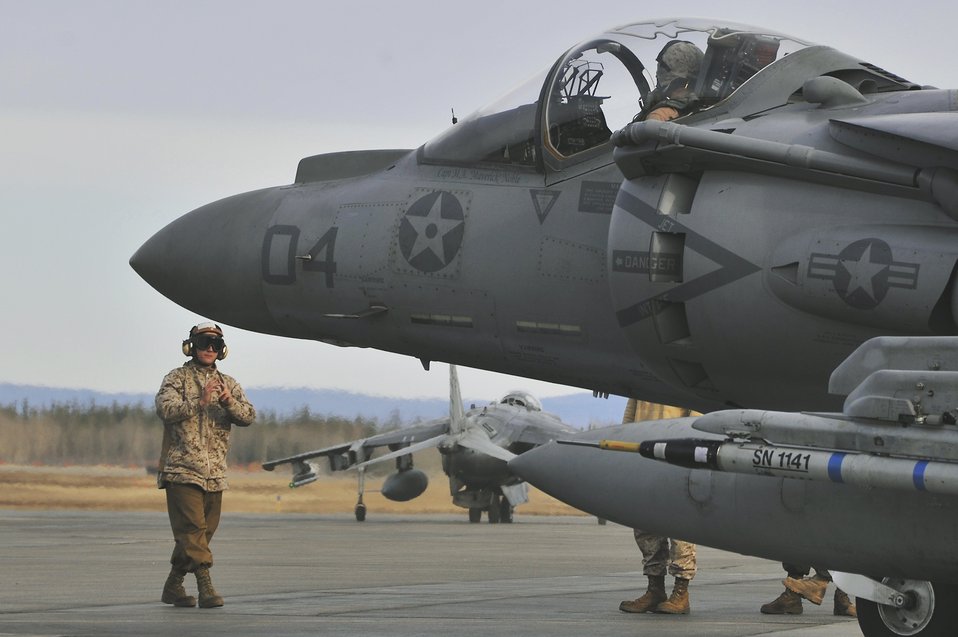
Red Flag-Alaska takes off

U.S. Marine Cpl. Kyle Loos marshals an AV-8B Harrier during Red Flag-Alaska 10-2, April 19, 2010, at Eielson Air Force Base, Alaska. Red Flag provides unique opportunities to integrate various forces into joint, coalition and bilateral training. Corporal Loos is assigned to VMA-211 at Marine Corps Air Station Yuma, Ariz.